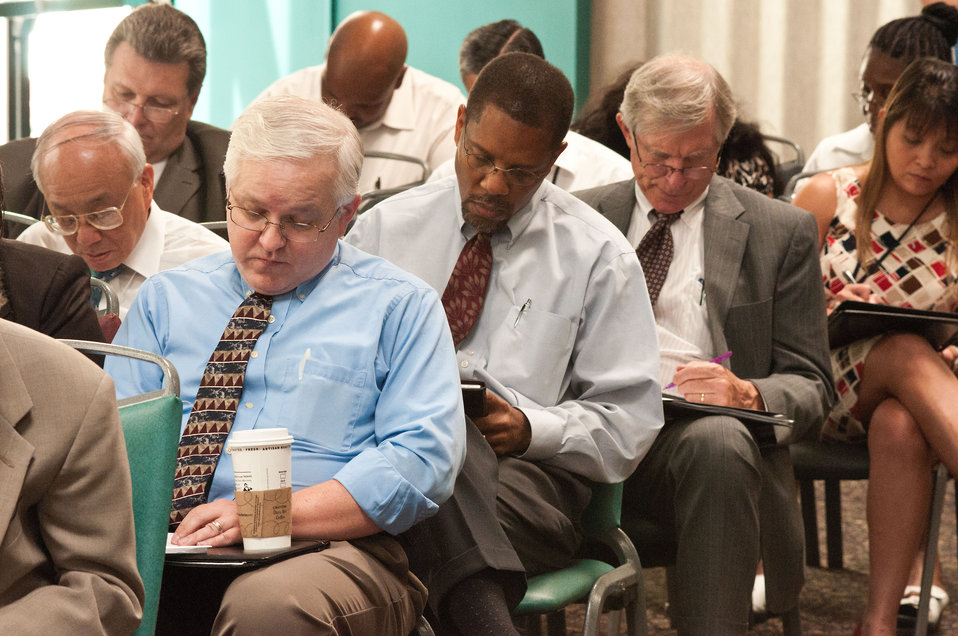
U.S. Department of Agriculture (USDA) Rural Development (RD) employees answer questionnaires associated with tele-work procedures during one of many forums held for the Rural Development Cultural Transformation Day event held in Washington, D.C. on Thursday, July 12, 2012.